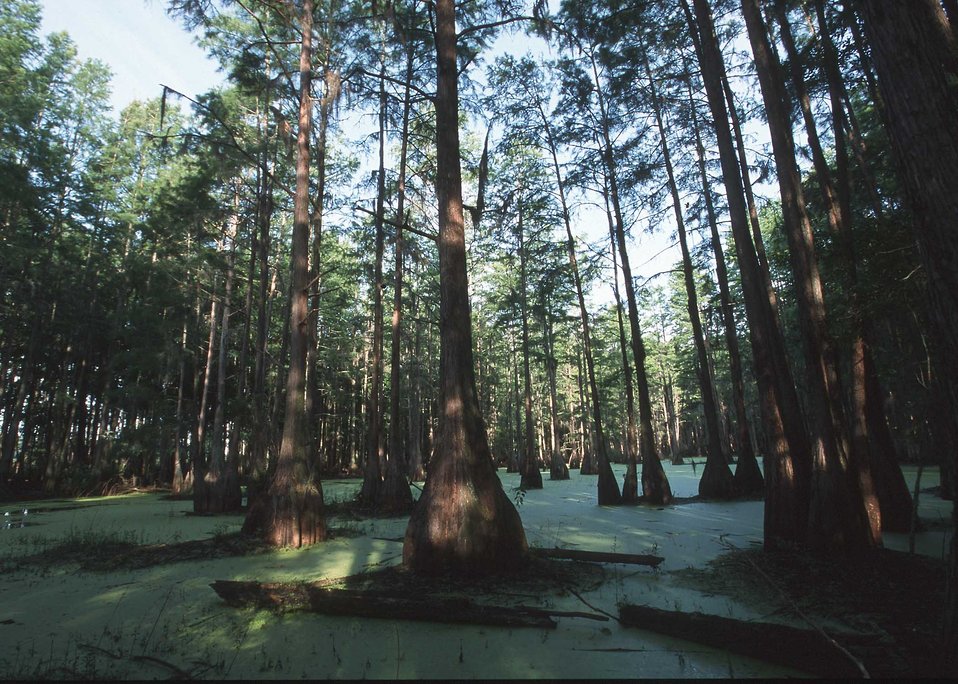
This cypress bay is a haven for many different species of wildlife.